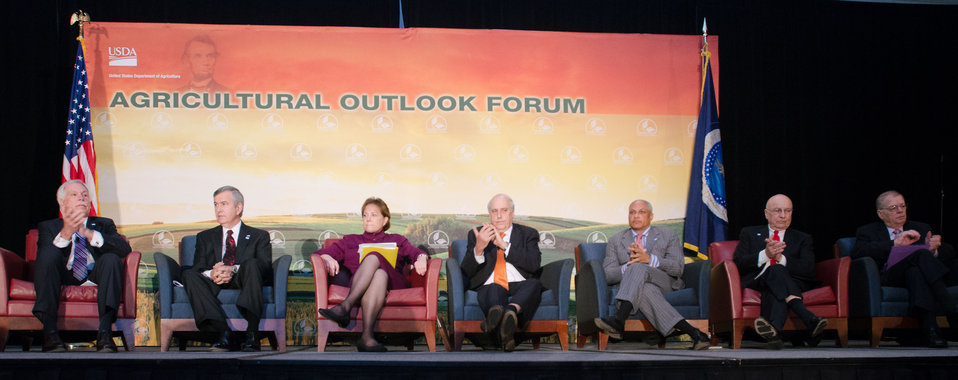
At the 2012 Agricultural Outlook Forum, “Moving Agriculture Forward” in Arlington, VA, on Thursday, February 23, 2012. 7 former Secretaries of Agriculture sat on the plenary panel “Visions of the Future” hosted by current Agriculture Secretary Tom Vilsack (L to R Former Governor Ed Schafer (ND), Senator Mike Johanns (NE), Ann Veneman, Agriculture Secretary Tom Vilsack, former Congressman Dan Glickman (KS), former Congressman Mike Espy (MS), Clayton Yeutter, and John Block).